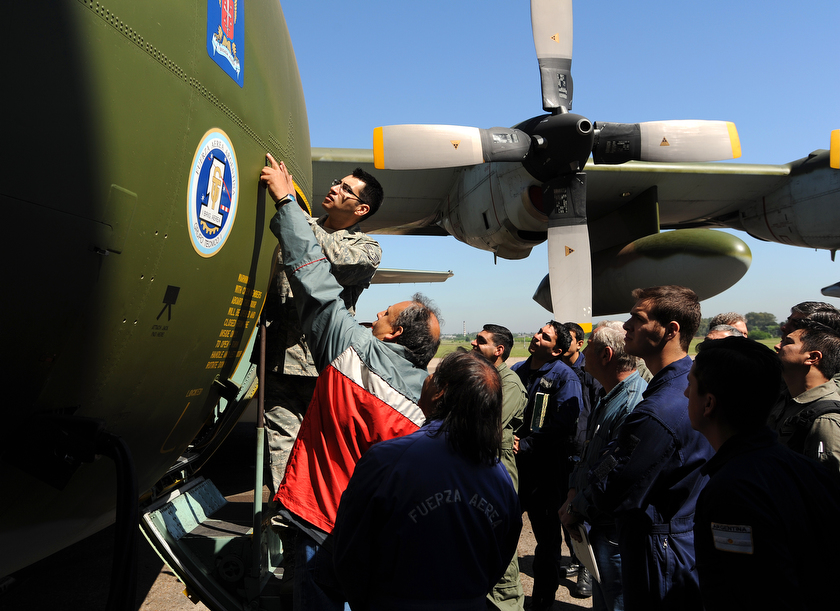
Maintainers partner to exchange new practices

U.S. Air Force Staff Sgt. David Hinojosa points out properly conducted structural repairs over the door frame on a C-130 Hercules during an evaluation of C-130 aircraft repairs at Palomar Air Base, Buenos Aires, Argentina. Sergeant Hinojosa is participating in Operation Southern Partner -- an in-depth, two-week subject matter exchange emphasizing partnership, cooperation and sharing of information with partner nation Air Forces in Latin America.